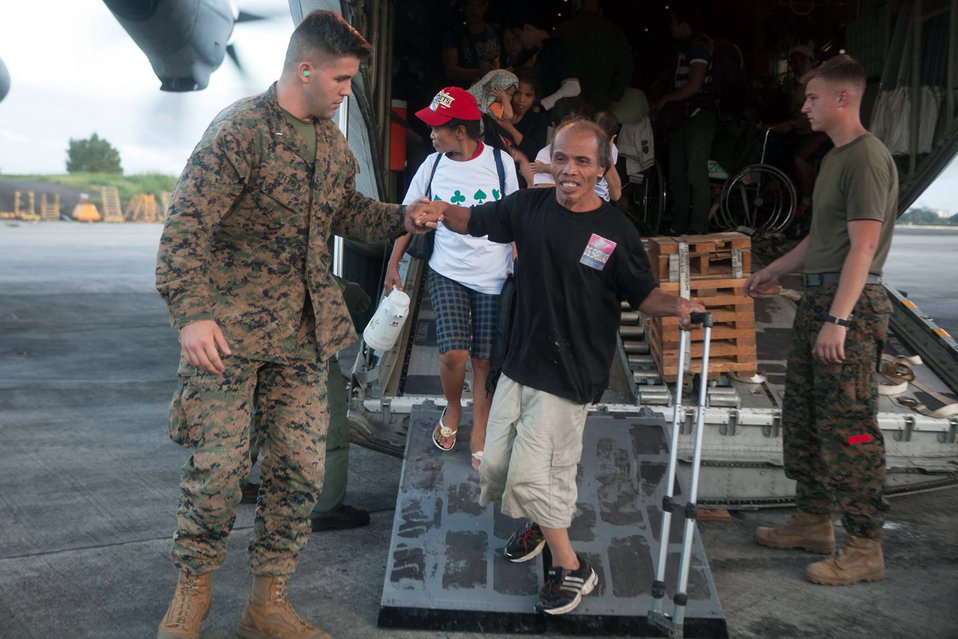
A U.S. Marine helps displaced civilians transfer from areas affected by Typhoon Haiyan on November 13, 2013. The U.S. government is working in partnership with the Philippine government to provide rapid humanitarian assistance and disaster relief.